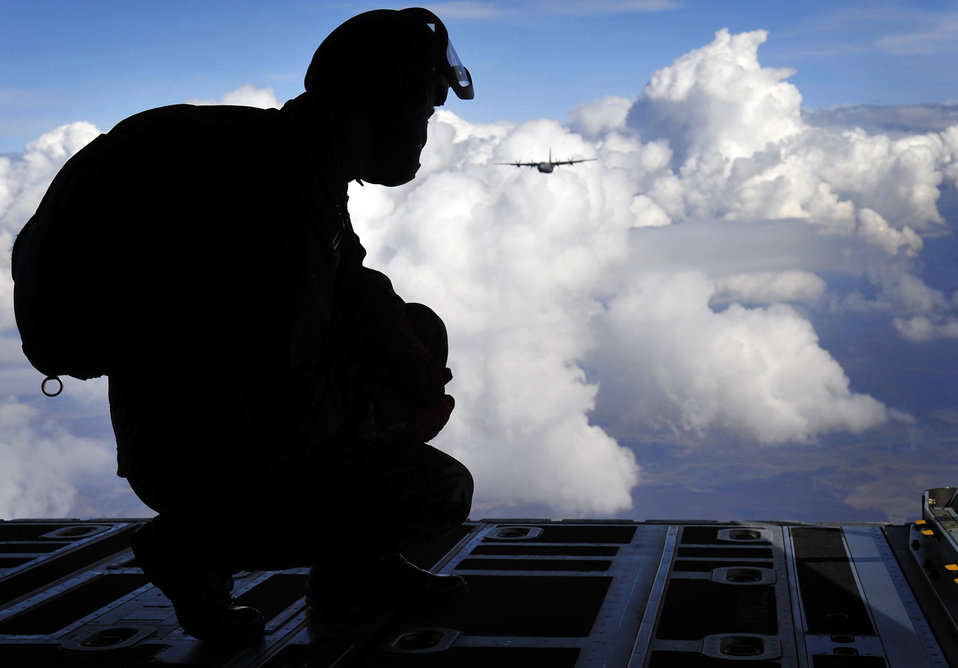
Ready to jump

A Romanian paratrooper awaits his signal to jump out of a C-130J Super Hercules during a combined jump March 18, 2011, over Campia Turzii, Romania, as part of Carpathian Spring 2011.